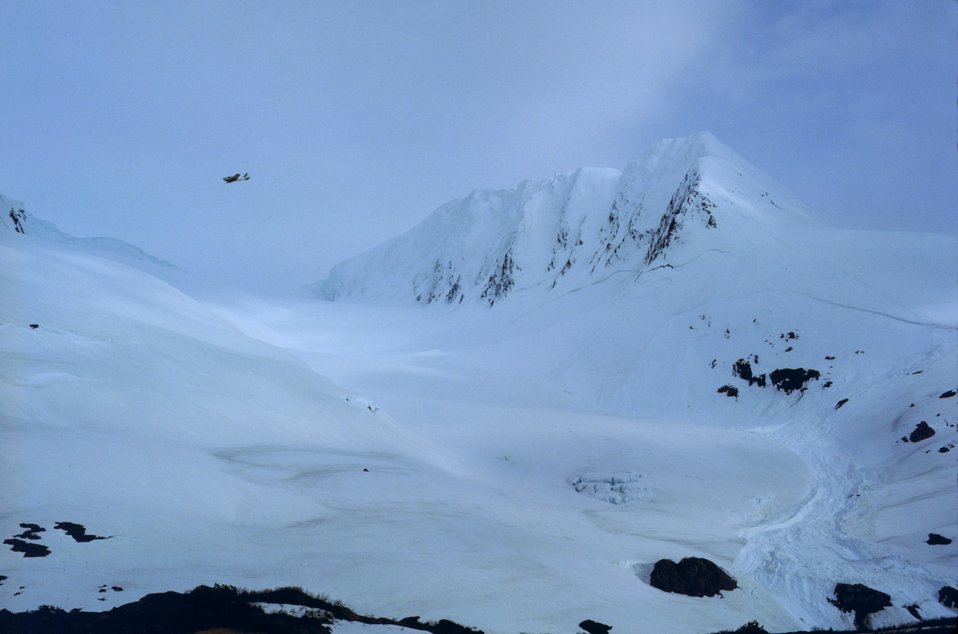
Portage Glacier area.